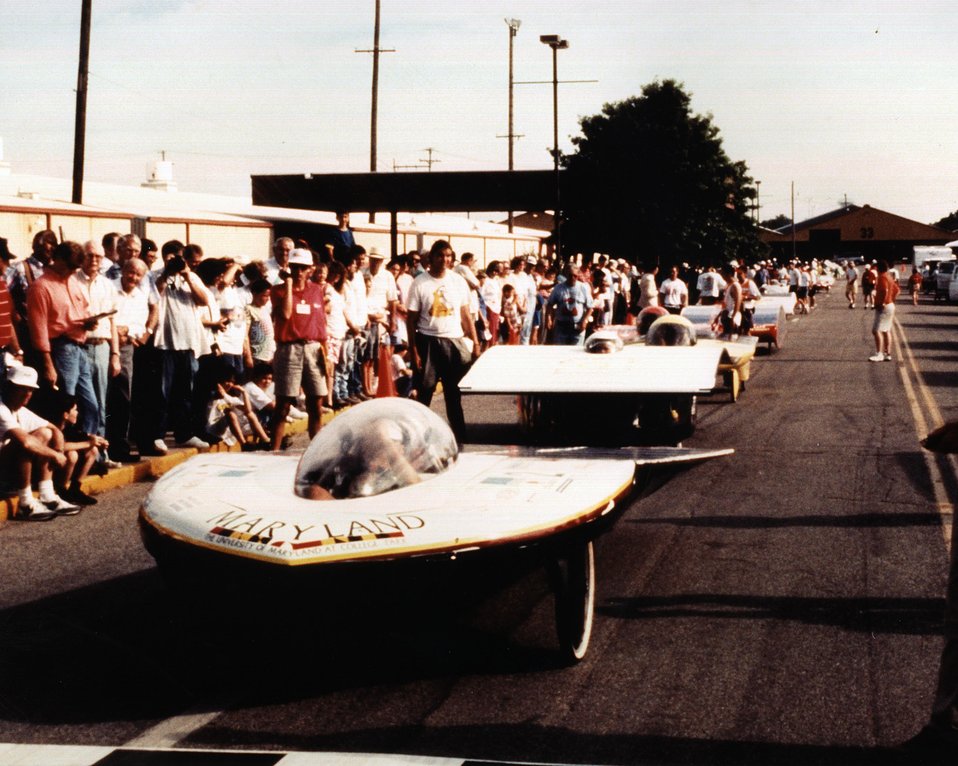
UNIVERSITY OF MARYLAND 'PRIDE OF MARYLAND' WON 6TH PLACE. 50 UNDERGRADUATE STUDENTS FROM THE MECHANICAL, ELECTRICAL, AND AEOROSPACE DEPARTMENTS DESIGNED AND BUILT THE CAR.